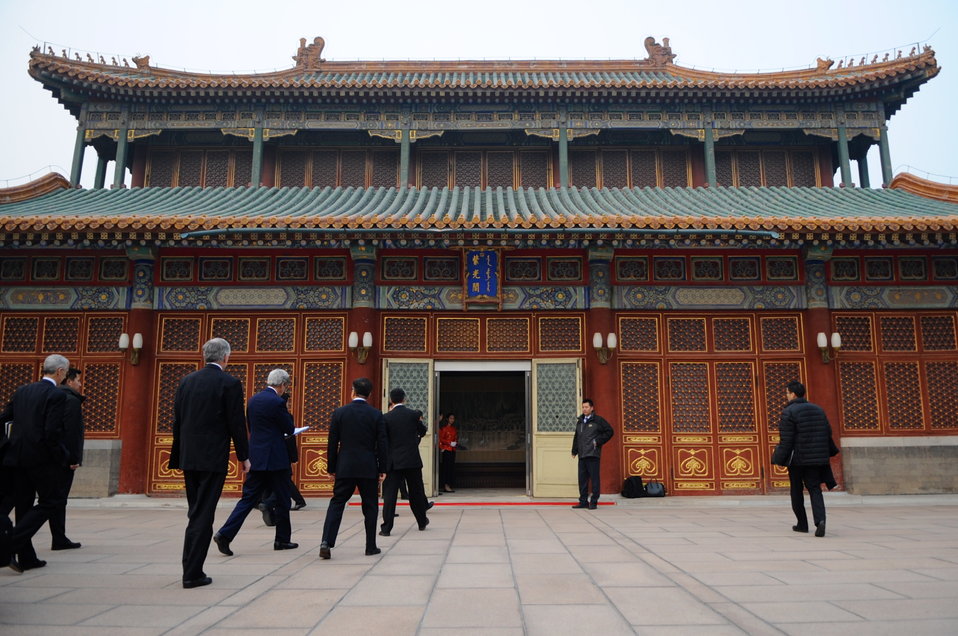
Secretary Kerry Arrives at Ziguangge Purple Chamber to Meet Chinese Premiere Li

U.S. Secretary of State John Kerry arrives at the Ziguangge Purple Chamber at the Zhongnanhai Leadership Compound in Beijing, China before a meeting with Chinese Premiere Li Keqiang on February 14, 2014.